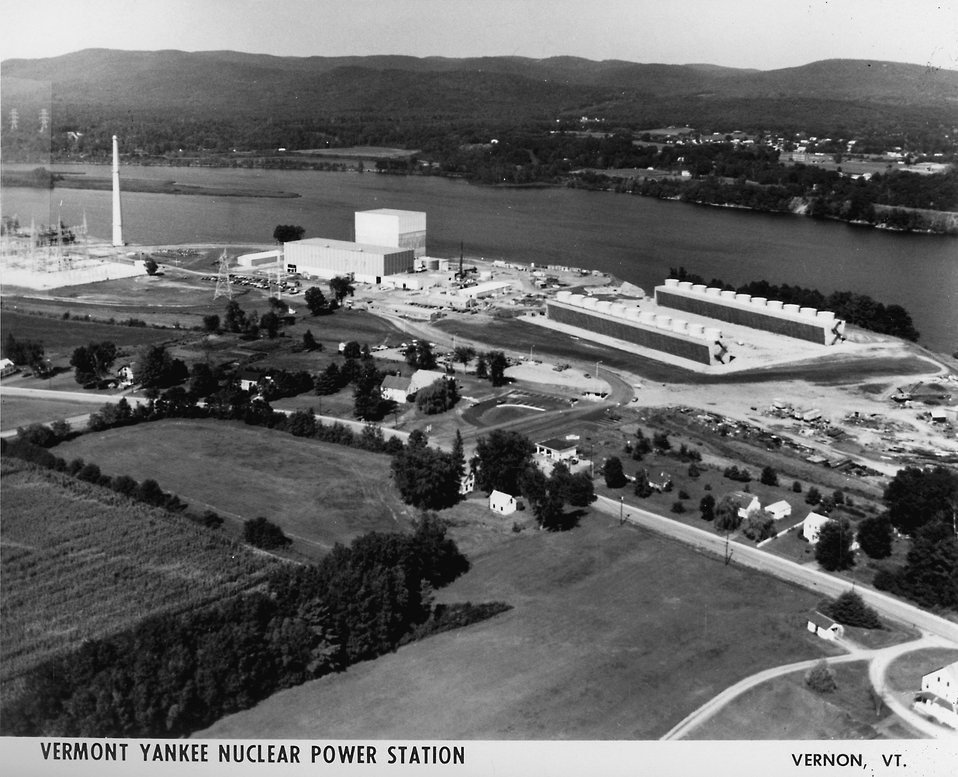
Aerial photo of the Vermont Yankee Nuclear Power Station located near Vernon, Vermont, shows the two mechanical draft cooling towers (right center). Circa 1974.